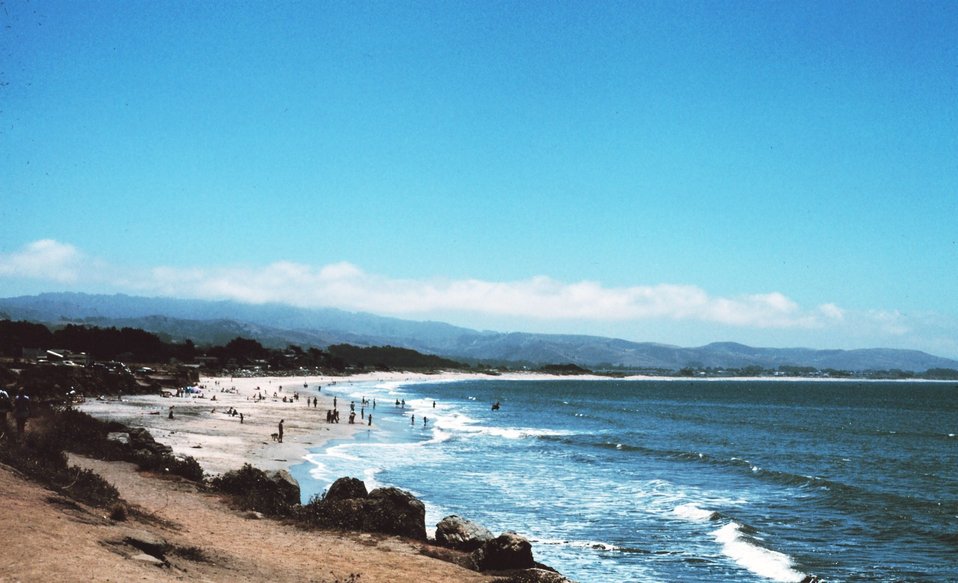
Asilomar Beach at Pacific Grove.